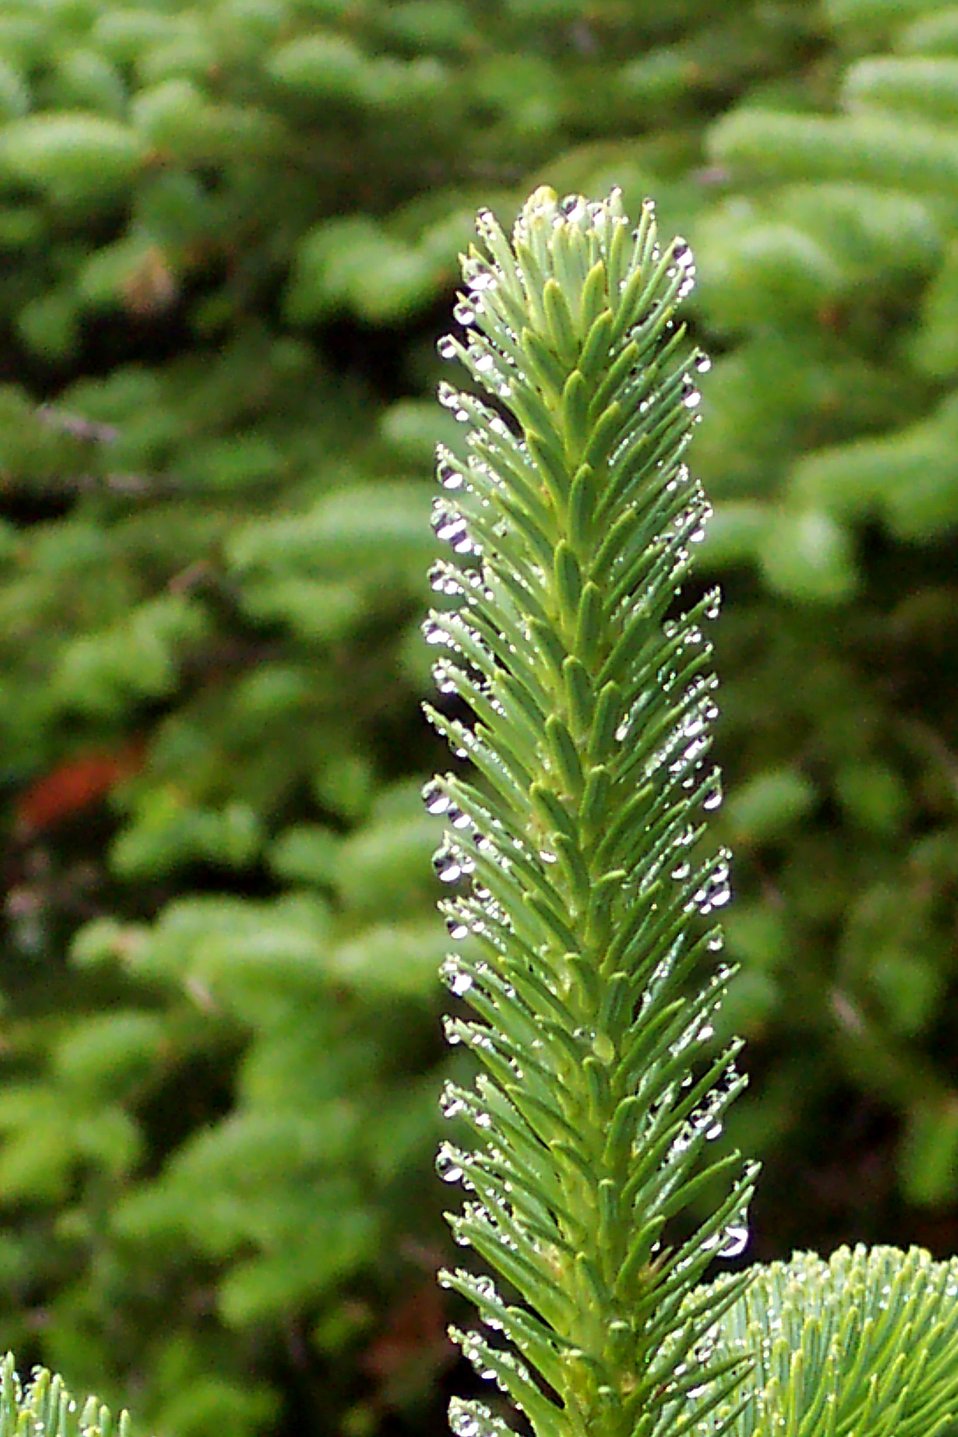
Fog dew on evergreens at West Quoddy Head.